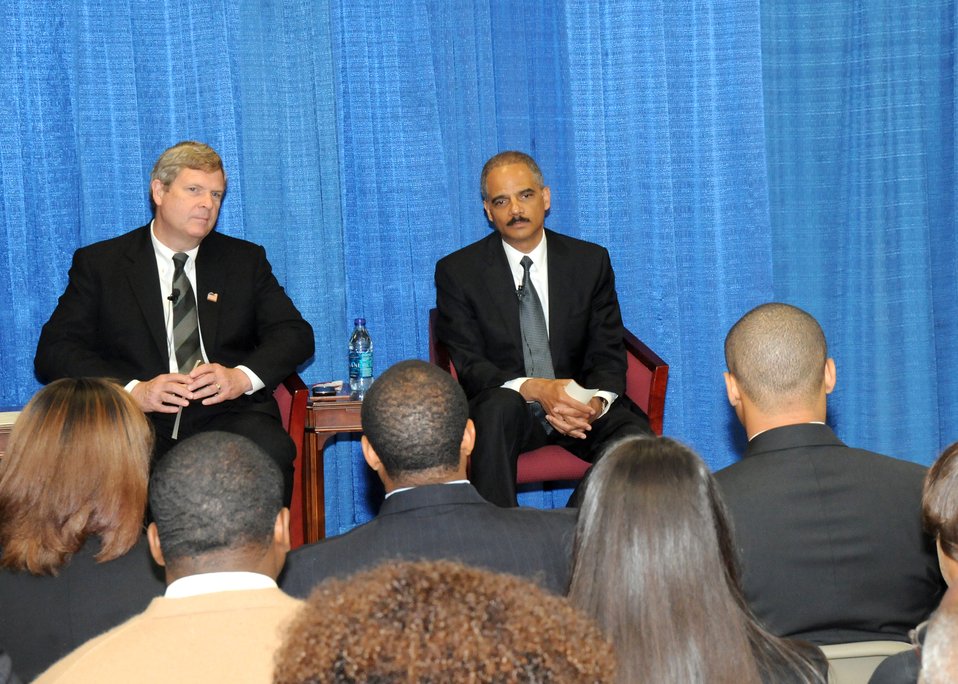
Agriculture Secretary Tom Vilsack and Attorney General Eric Holder hold a teleconference with 1890’s Land Grant Colleges and Universities at Alabama A & M University in Normal, AL., on Friday, May 21, 2010. Participating in the teleconference were Delaware State, Florida A & M, and Lincoln University of Missouri. USDA photo 10di1362-48.